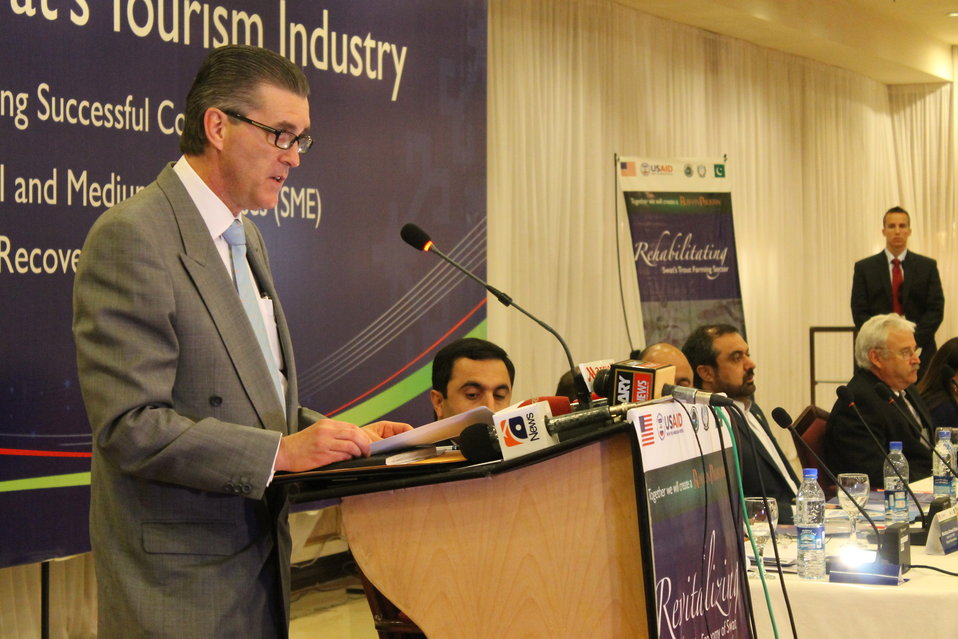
Graduation event of USAID Firms Project's Malakand Small and Medium Enterprises (SME) Recovery Assistance Program

“In the wake of the conflict and floods that have devastated this area over past five years, in 2010, the U.S. government and the Government of Pakistan jointly decided that the recovery of the Swat Valley’s economy must be a priority. These efforts to revive Swat’s tourism industry have helped create jobs and enhance incomes for the people of Swat Valley,” Ambassador Olson said at the event.